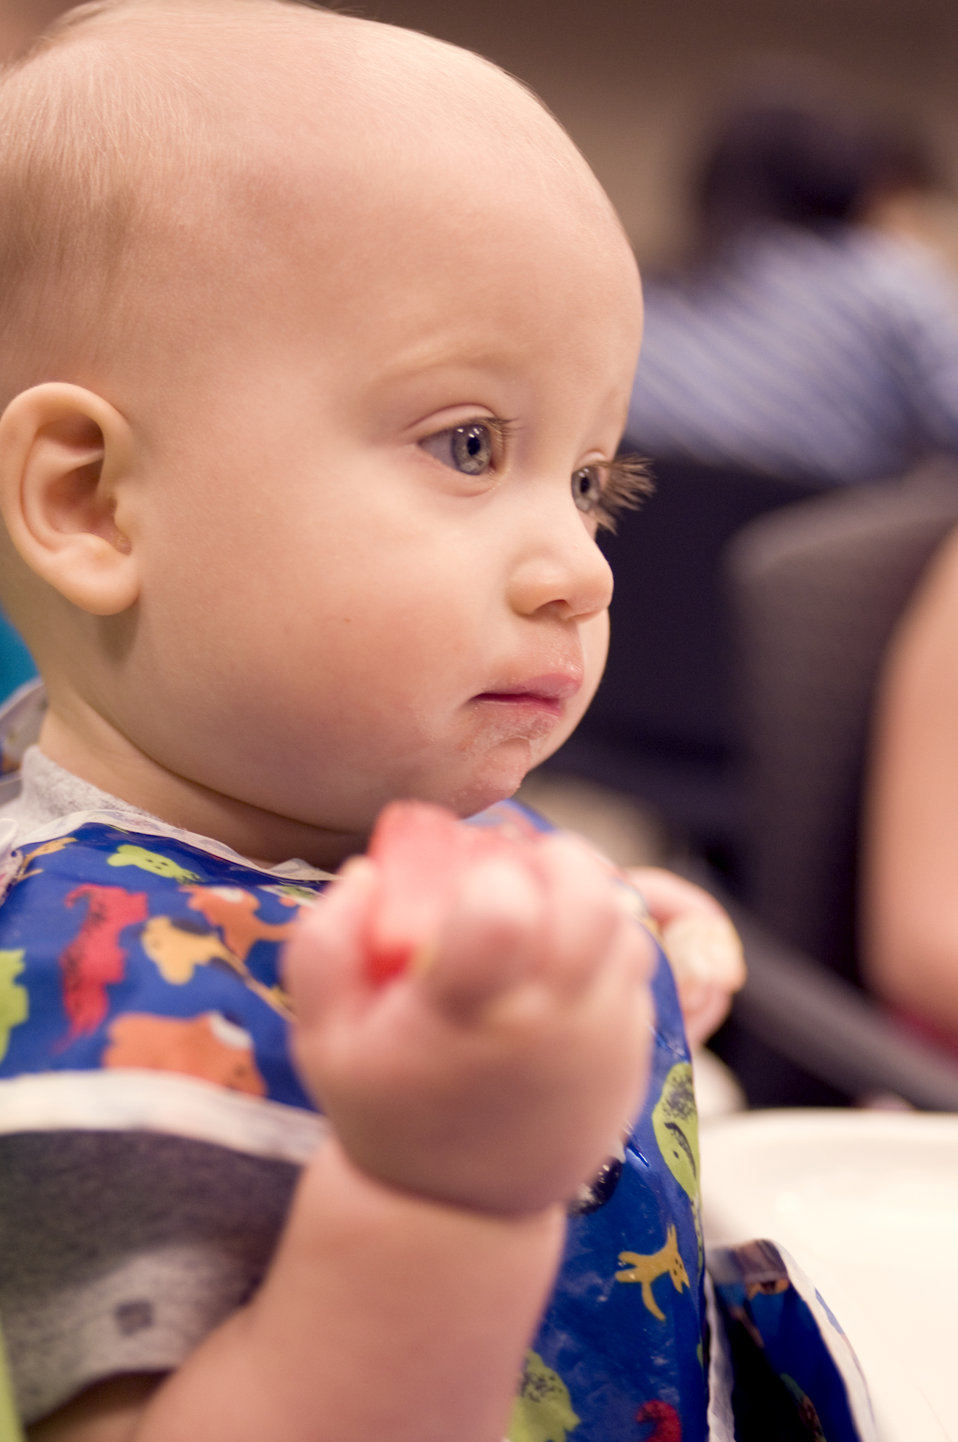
The very young girl depicted here, was holding a piece of watermelon, which she'd been served in a daycare setting.